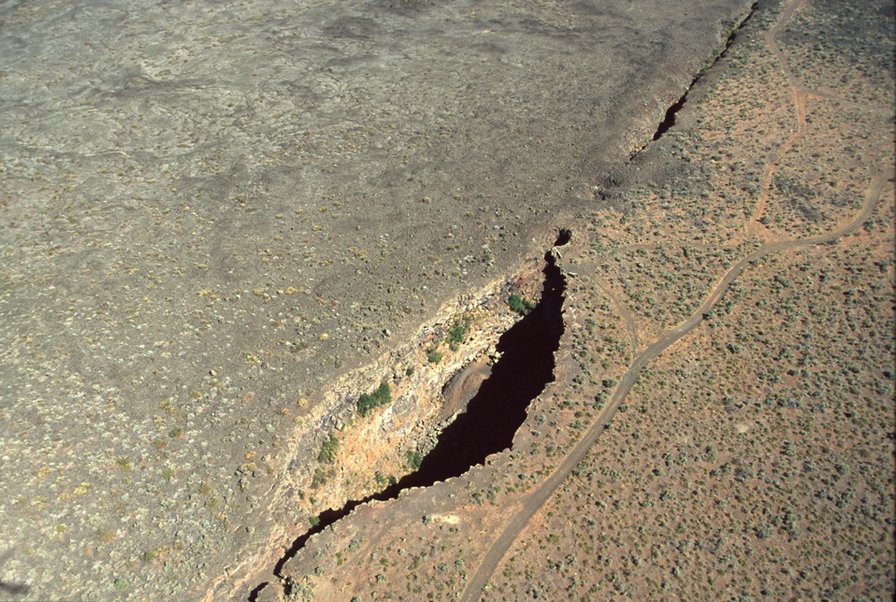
Shoshone Field Office USRD Upper Snake River District